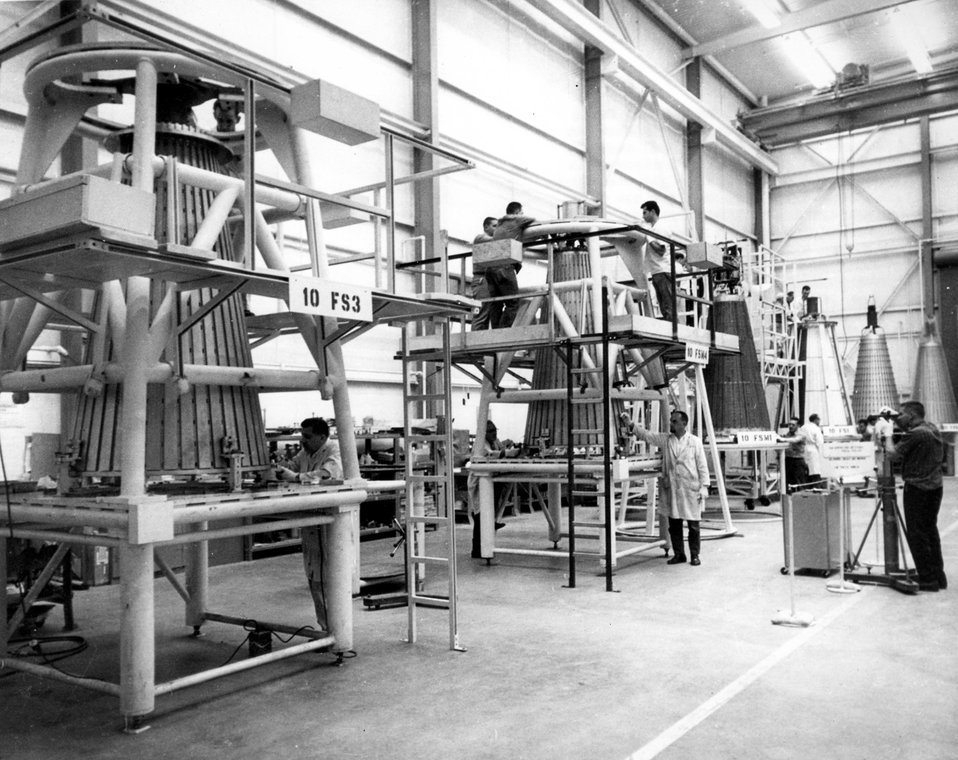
SNAP 10A assembly line at the Nuclear Field Laboratory of Atomics International near Los Angeles.